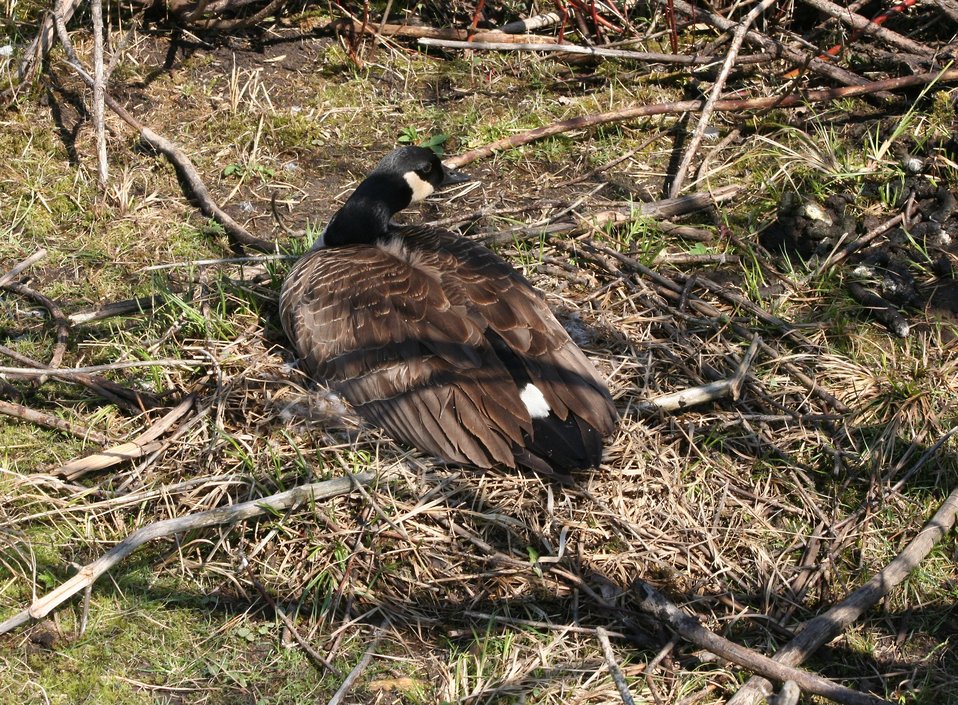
A nesting Canada Goose (Branta canadensis) at the Tifft Nature Preserve, Buffalo, NY.